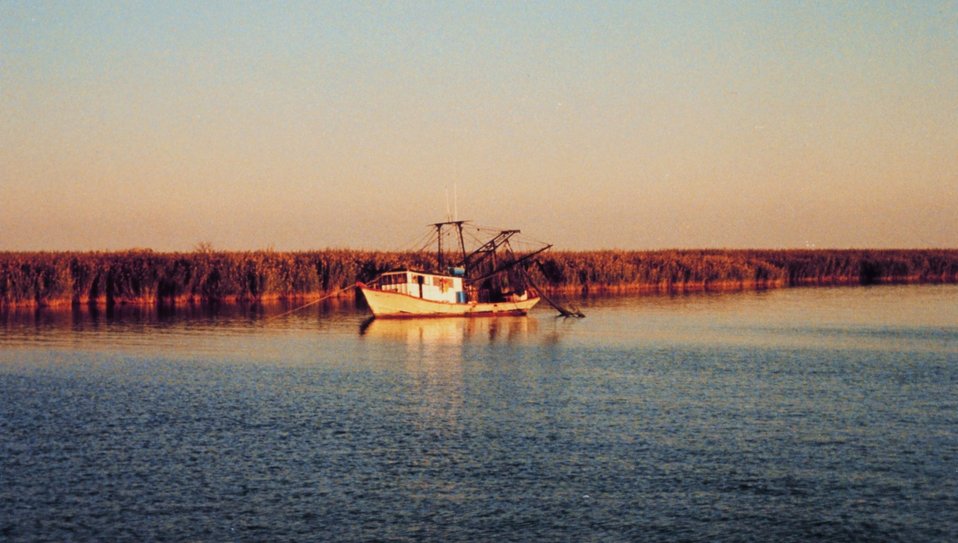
A shrimp boat anchored near the cane brakes